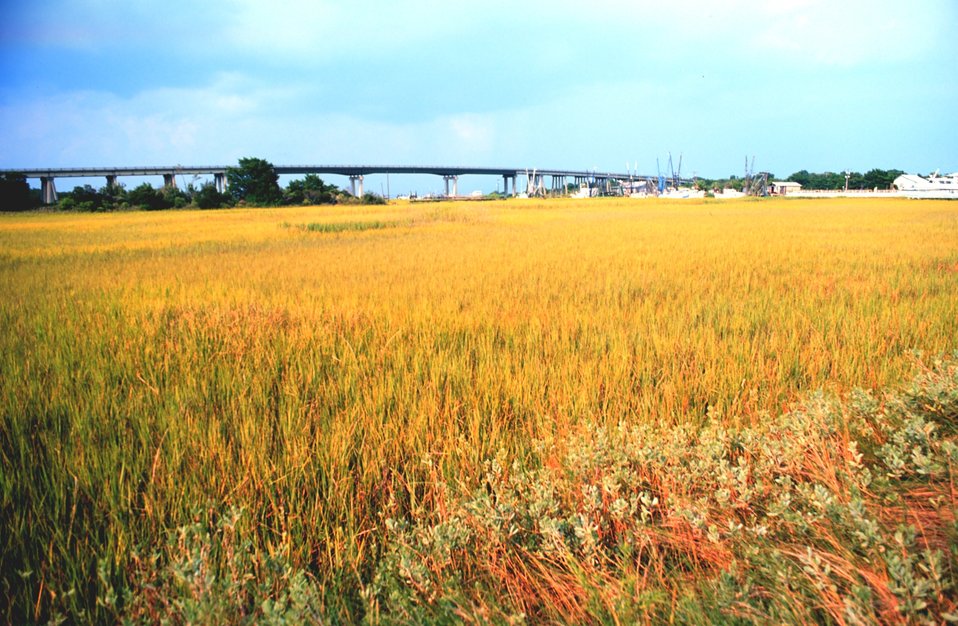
A view over the wetlands to the Lazaretto Creek Bridge